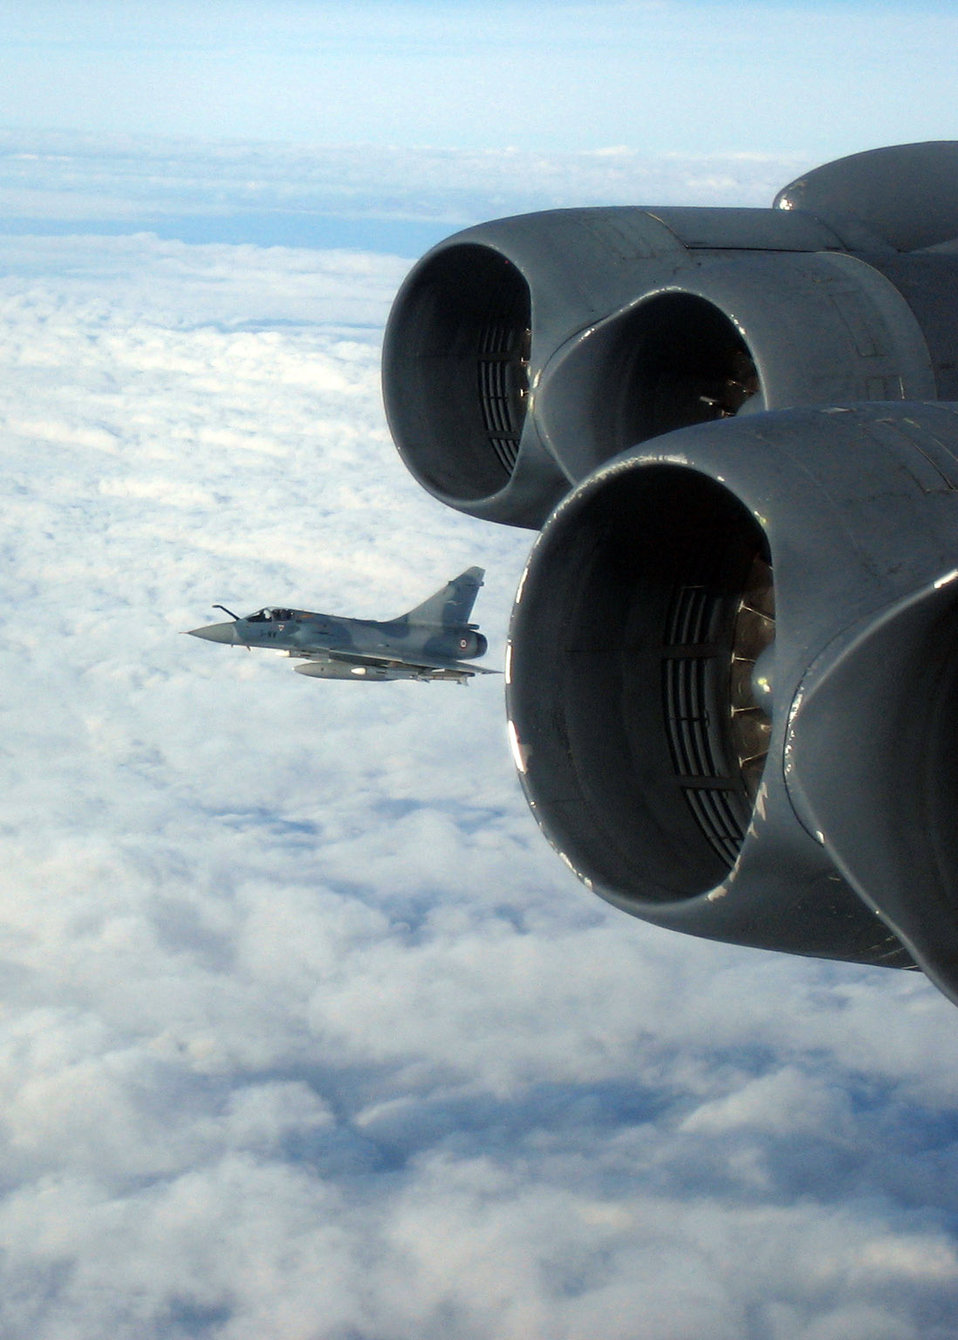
Bright Star 2005

OVER FRANCE -- A French air force Mirage 2000 fighter escorts a B-52 Stratofortress. The bomber from Barksdale Air Force Base, La., was en route to Egypt to participate in exercise Bright Star 2005. The exercise began Sept. 10 and ended Oct. 3. It included forces from the United States, Egypt, France and 11 other countries.